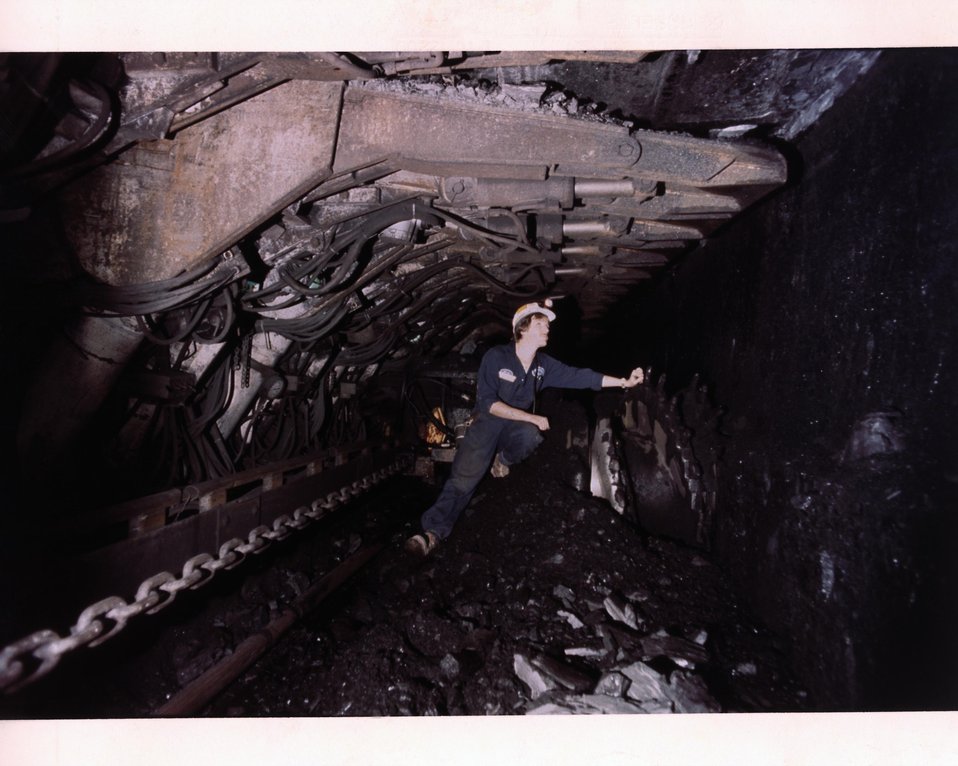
MINERS ARE PROTECTED BY THE THYSSEN ROOF SUPPORTS.

THE CANOPY EXTENSIONS ARE HYDRAULICALLY OPERATED. THE SHIELD SUPPORTS WEIGH 17.5 TONS AND MEASURE 16.5 FEET IN LENGTH.